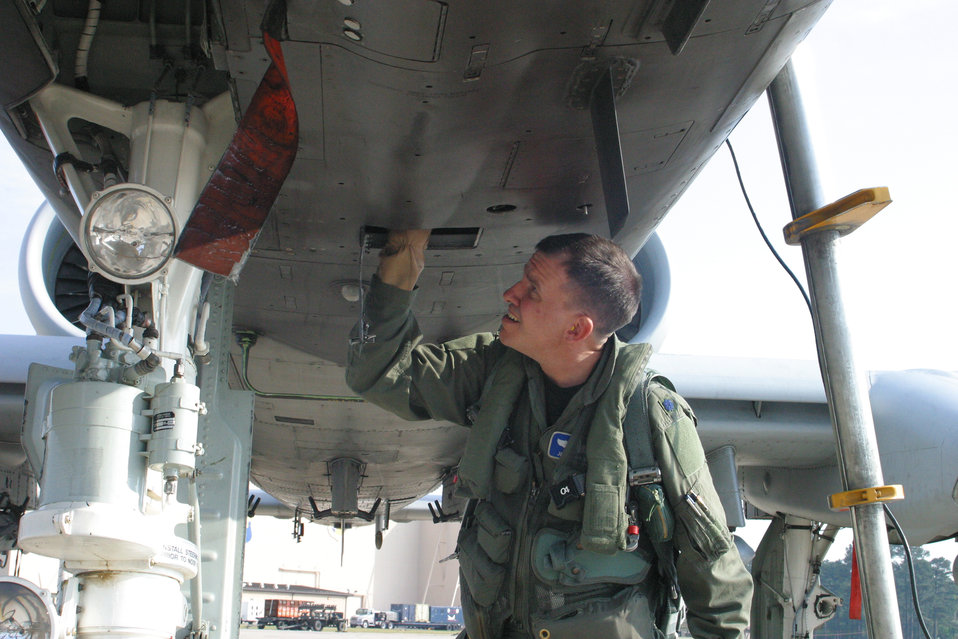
Preparing to deploy

POPE AIR FORCE BASE, N.C. -- Lt. Col. Jeffrey Cowan inspects an A-10 Thunderbolt II here before a flight May 4. He and more than 200 Airmen of the 74th Fighter Squadron are preparing to deploy to Afghanistan supporting Operation Enduring Freedom. Colonel Cowan is the squadron's commander.